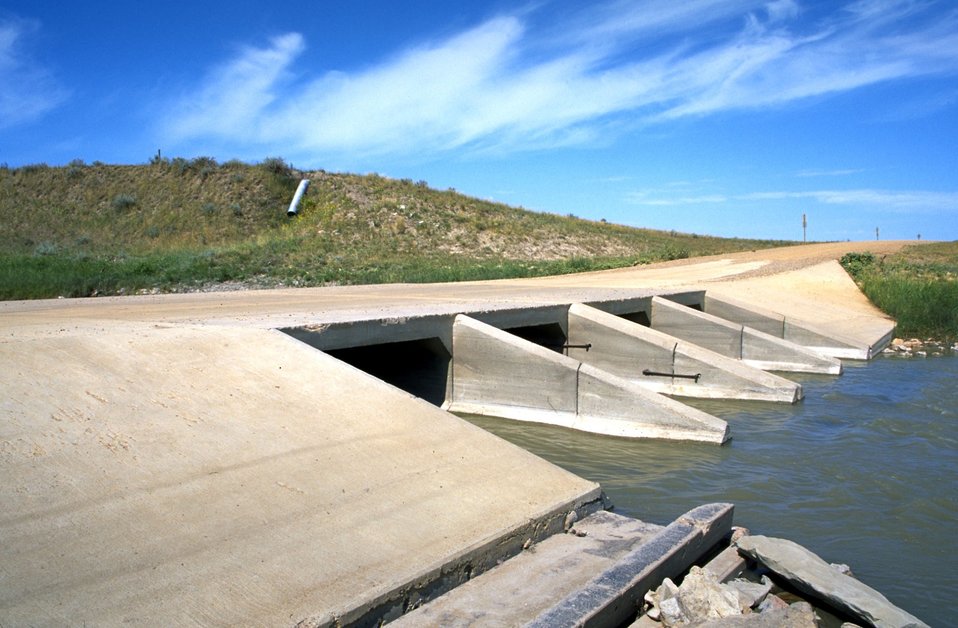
Low water crossing over the Little Missouri River